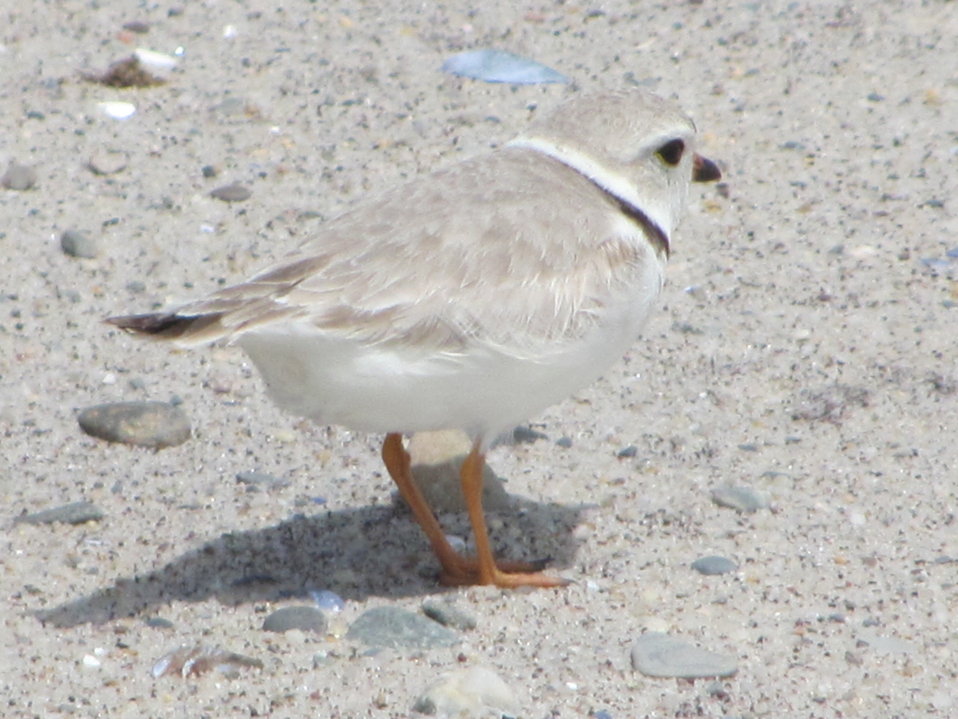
Piping plover, Monomoy National Wildlife Refuge, MA. By Ravin Tomasson,USFWS